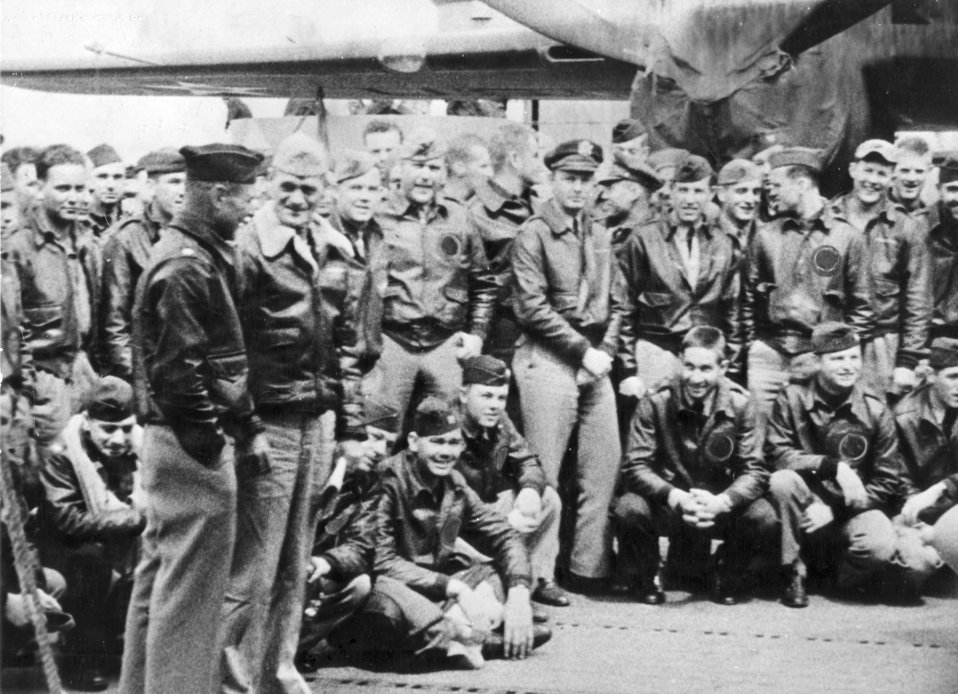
Doolittle's Raid

Orders in hand, Navy Capt. Marc A. Mitscher, skipper of the USS Hornet (CV-8) chats with Lt. Col. James Doolittle, leader of the Army Air Forces attack group. This group of fliers carried the battle of the Pacific to the heart of the Japanese empire with a daring raid on military targets in major Japanese cities. It was the result of coordination between the two services. The USS Hornet carried the 16 B-25 bombers to within take-off distances of the Japanese Islands.